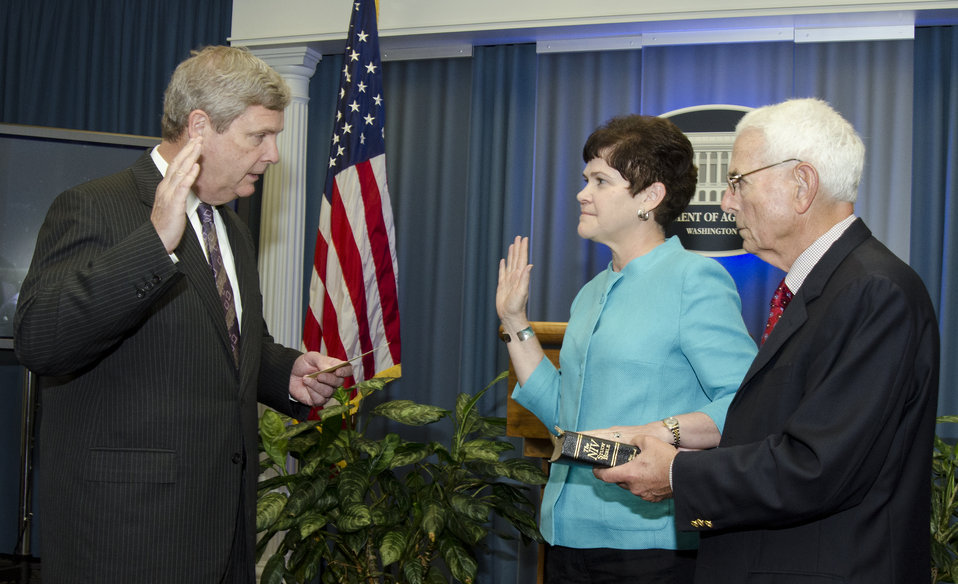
Agriculture Secretary Tom Vilsack swears in Krysta Harden as the new Deputy Secretary of Agriculture. Deputy Secretary Harden is accompanied by her husband, former U.S. Congressman Charles Hatcher at the U.S. Department of Agriculture in Washington, D.C. on Monday, Aug. 12, 2013.